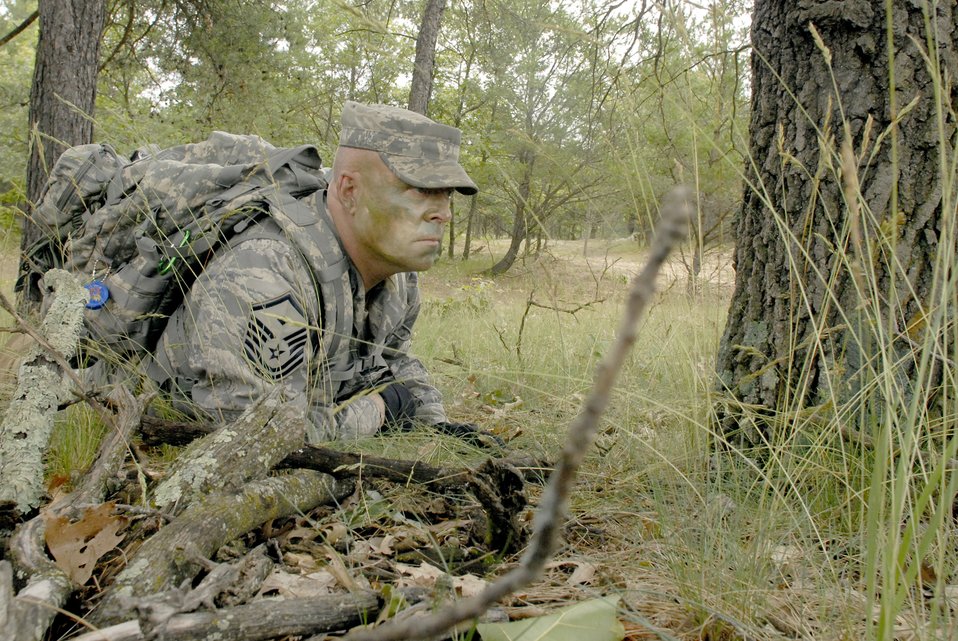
Security forces land navigation exercise

Master Sgt. Kent Falstad takes part in a land navigation exercise June 13, 2010, at Volk Field Combat Readiness Training Center. Wis. Sergeant Falstad is the first sergeant with the 115th Security Forces Squadron.